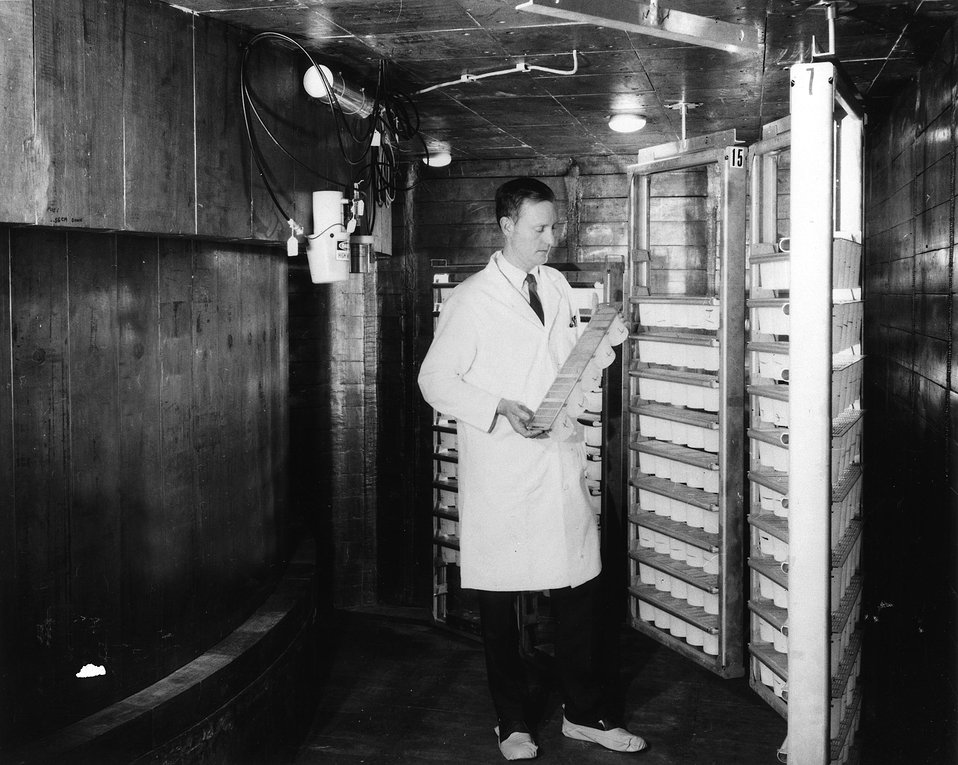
The JANUS research reactor is used in studies underway at the AEC's Argonne to compare the irradiation effects of neutrons and gamma rays on mice.
c.1972